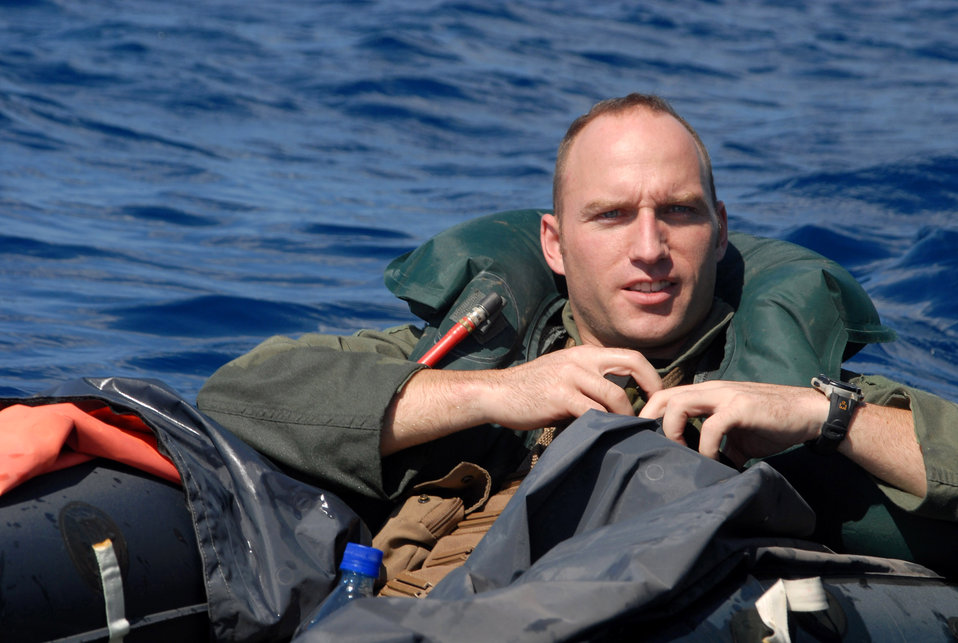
Airmen practice water rescue

Capt. Derek Flynn waits for rescue in the waters off the coast of Okinawa, Japan, Oct. 24 during local operational readiness exercise Beverly High 08-1. Captain Flynn was placed in the water as part of a survival, evasion, resistance and escape training held by Kadena Air Base members. Captain Flynn is with the 67th Fighter Squadron.